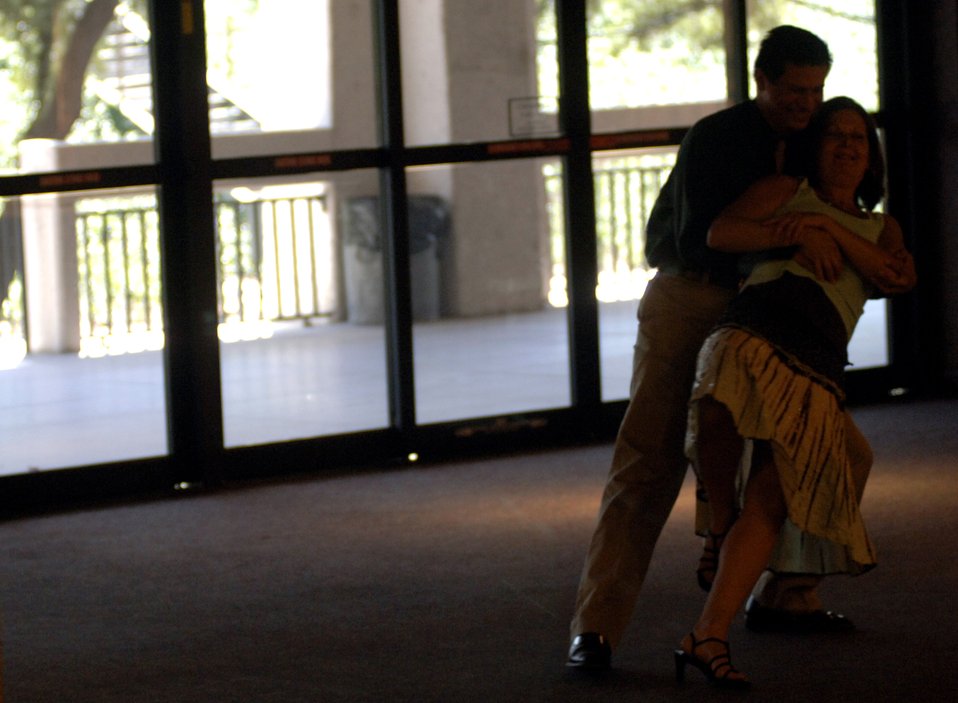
Memorial Day observances

Air Force veteran David Guerrero and Robin Smith dance to big band swing music provided by the Sentimental Journey Orchestra at the Institute of Texan Cultures in San Antonio on Sunday, May 28, 2006. The orchestra played a musical tribute to the nation's military members. More than 800 people attended the show on Memorial Day weekend.